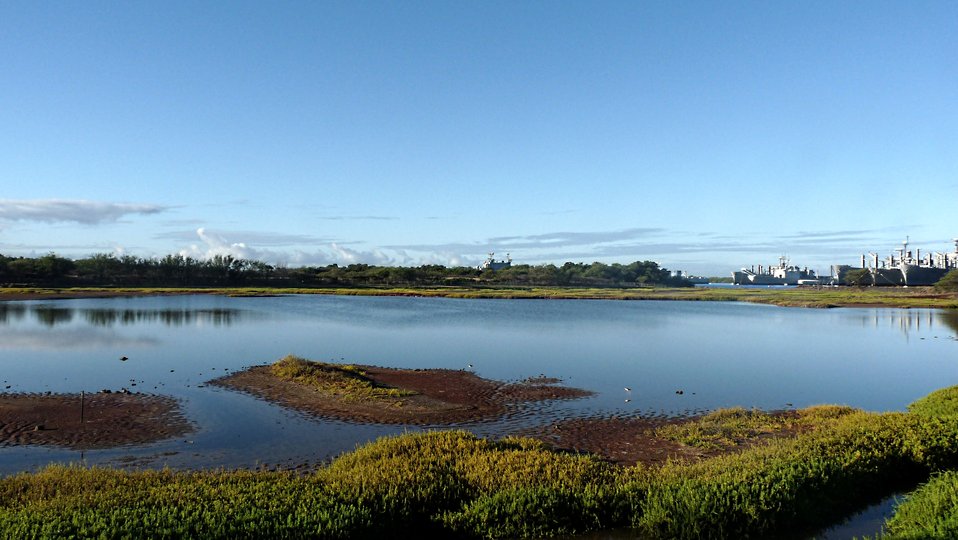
Waiawa Unit - Pearl Harbor NWR